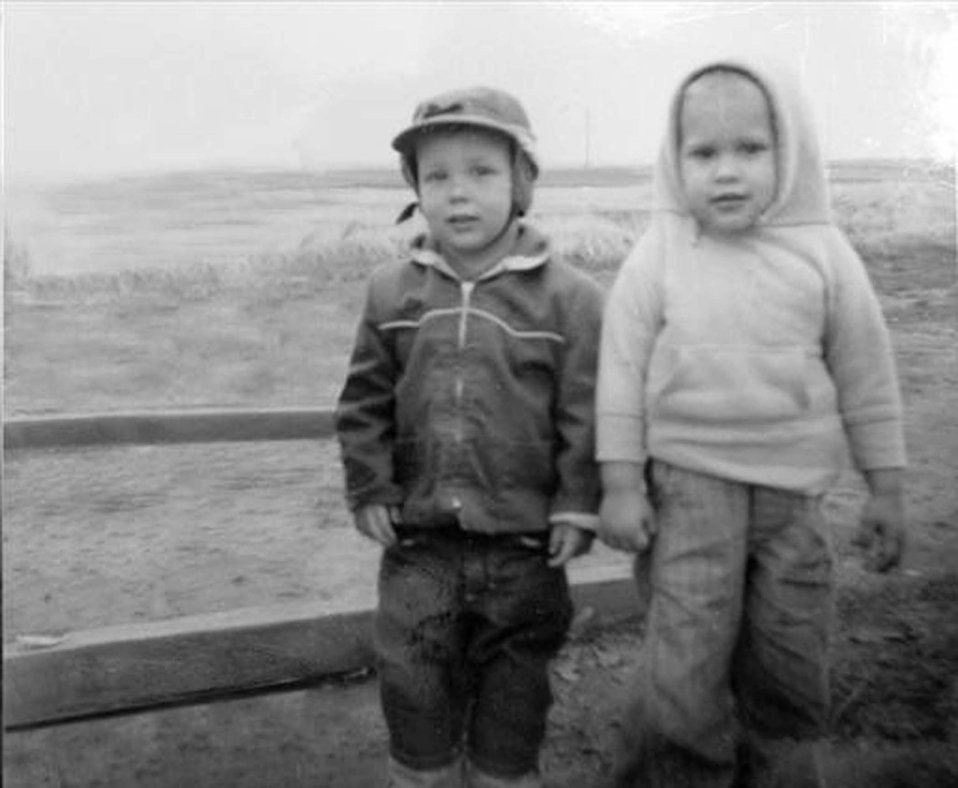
From one sandbox to another

Jeffrey Dunn (left) and Brian Bishop pose next to the sandbox they played in at Mather Air Force Base, Calif., in the spring of 1963.